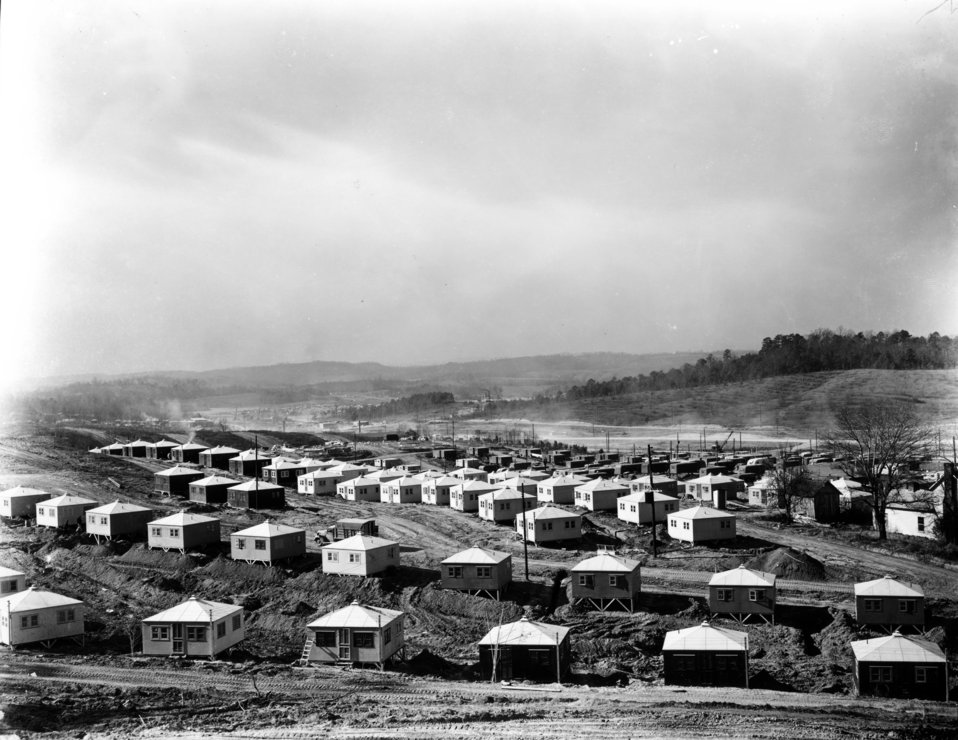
Housing at Oak Ridge